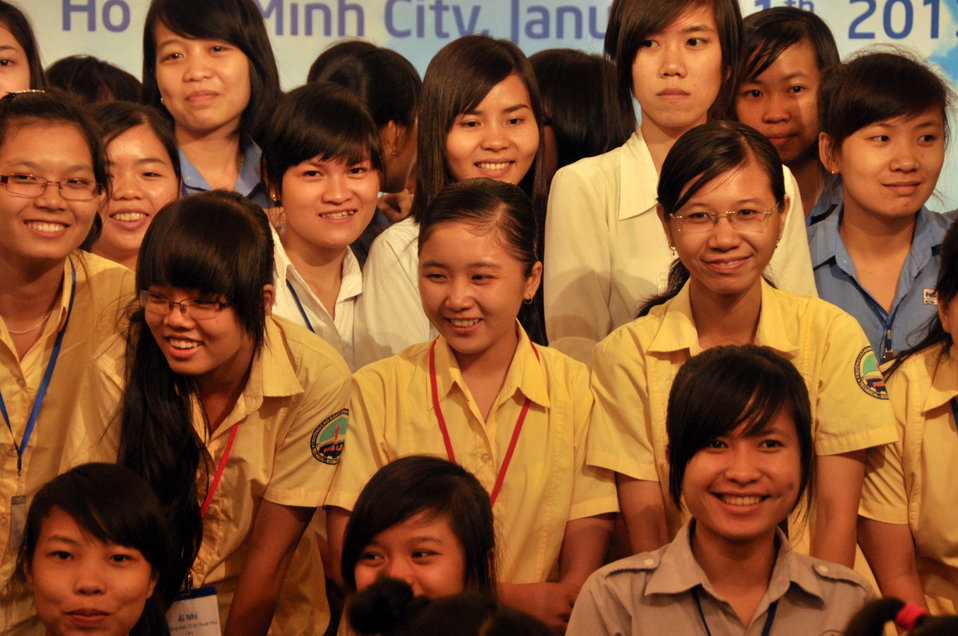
Female Vocational Student Scholarship Ceremony

Ho Chi Minh City, January 11, 2013